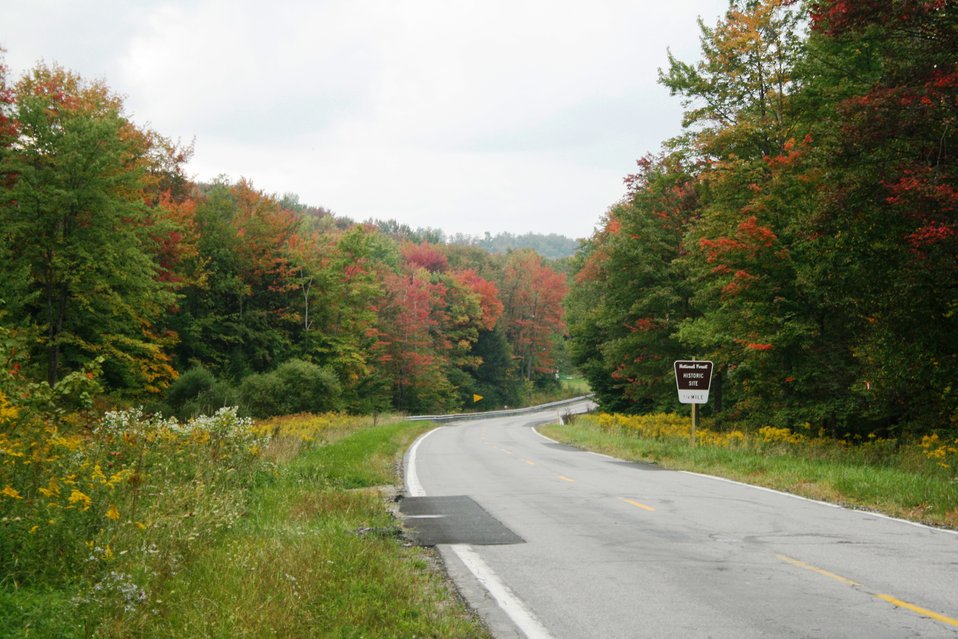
Scenic drive along the Powerhouse Historic Site on the Allegheny National Forest in Pennsylvania. The U.S. Forest Service (FS) has a Forest Service 2012 Fall Colors Website and a toll-free Fall Colors Hotline at 1-800-354-4595 that will help visitors plan their trip to catch the colors at their peaks.